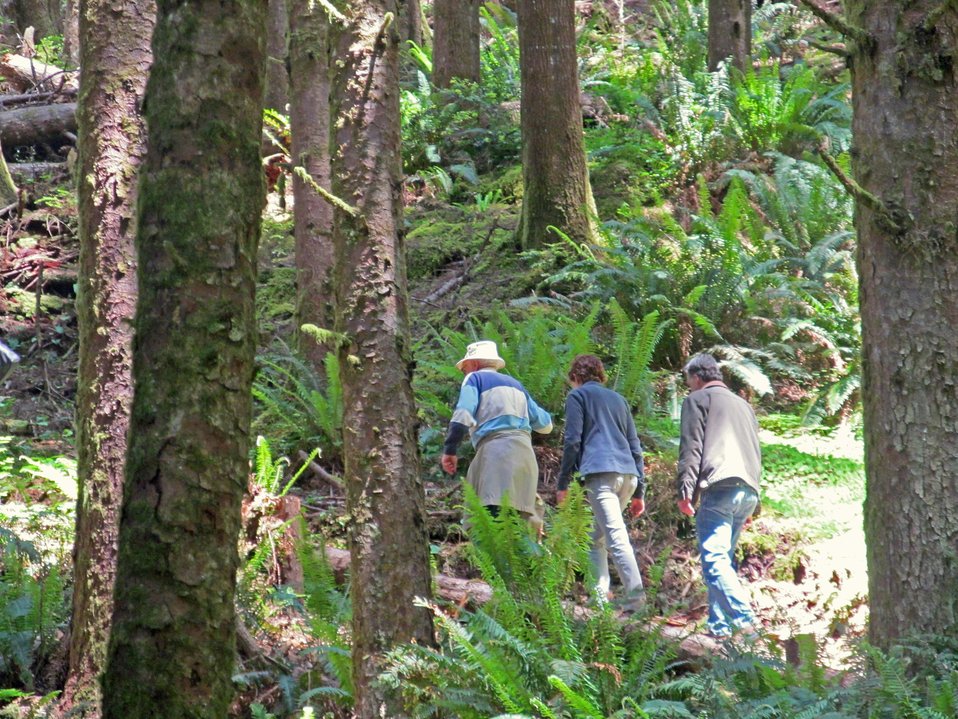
TrailDay trail walkers

Visitors hike on the Siuslaw National Forest section of the Ya’Xaik Trail in Oregon. On Jun. 1, 2013, the City of Yachats, a small coastal city in Oregon, joined with the U.S. Forest Service and Oregon State Parks to celebrate National Trails Day that included the dedication of the new Ya’Xaik (pronounced yäh’ khīk) Trail. The trail is named for the only known village of the Alsea people who originally inhabited the area.